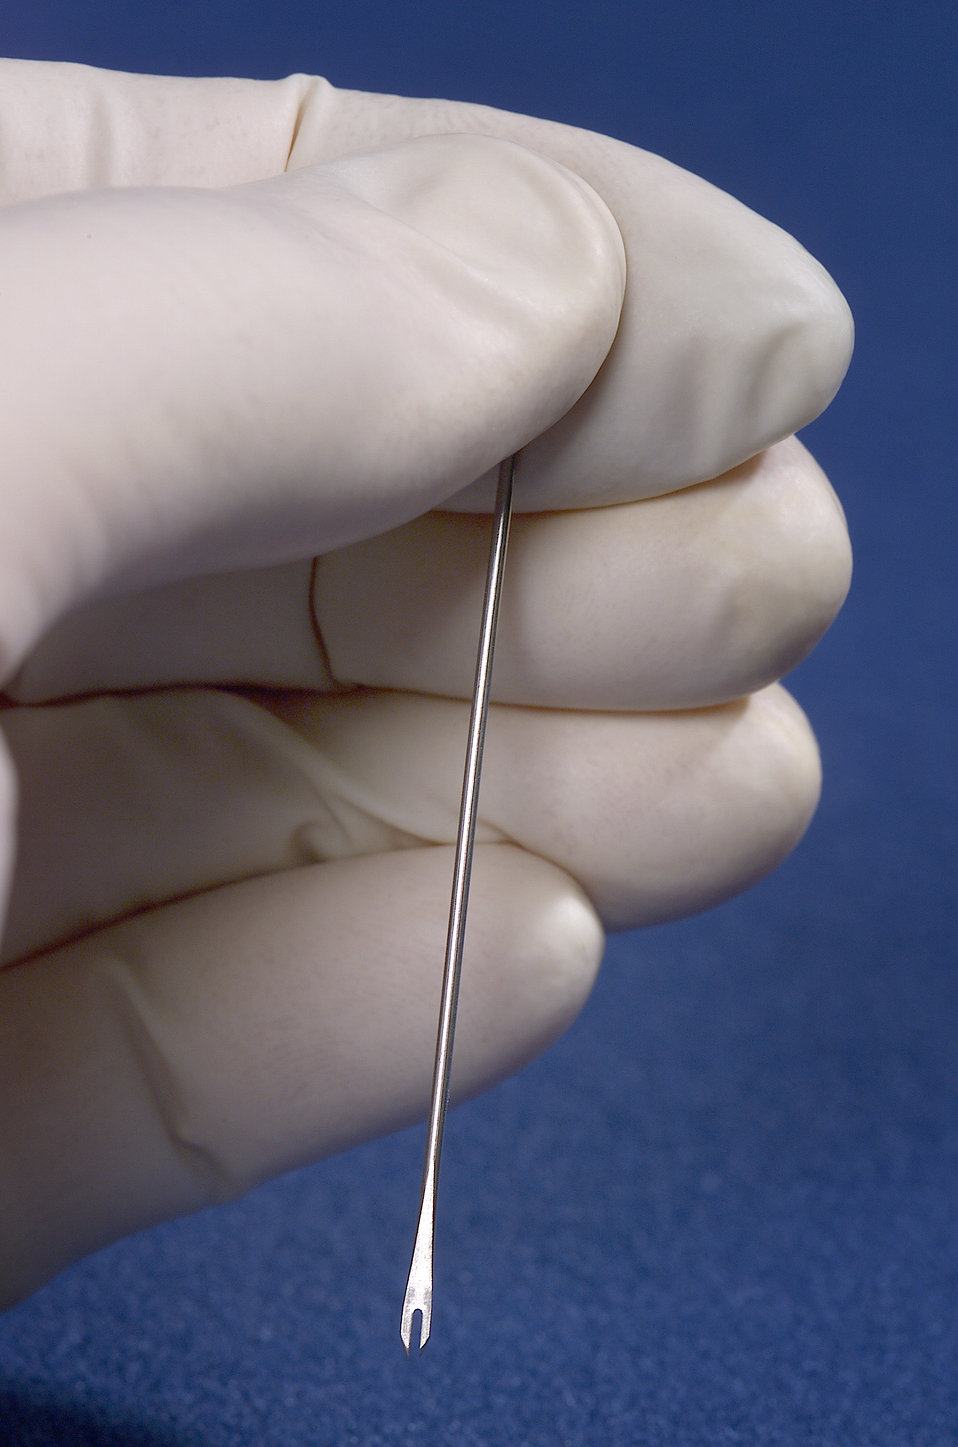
The tip of a hand-held bifurcated needle used to vaccinate individuals with the smallpox vaccine.